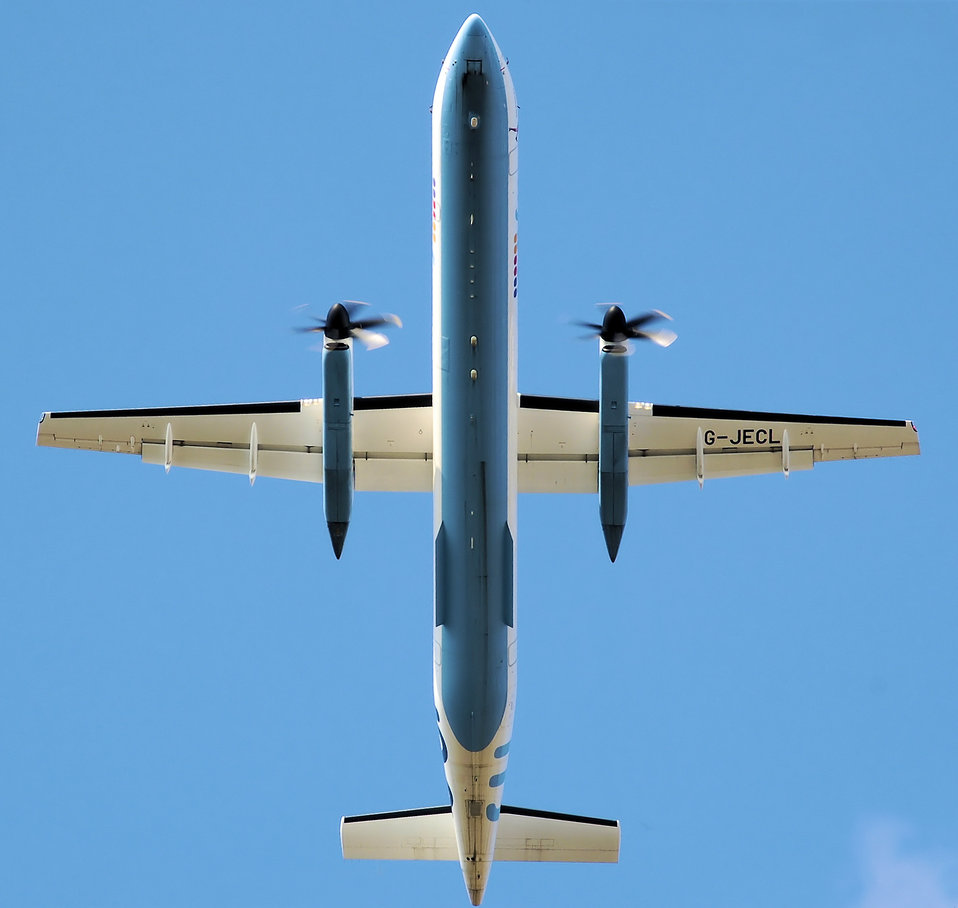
Dash 8 in planform arp